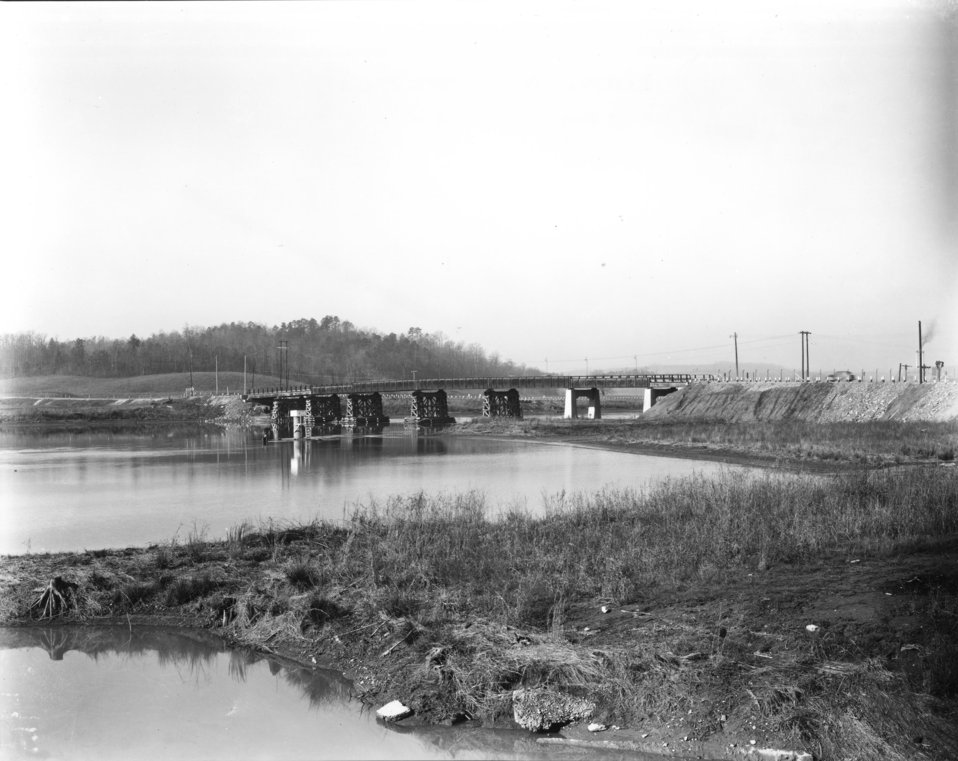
Recreation at Oak Ridge